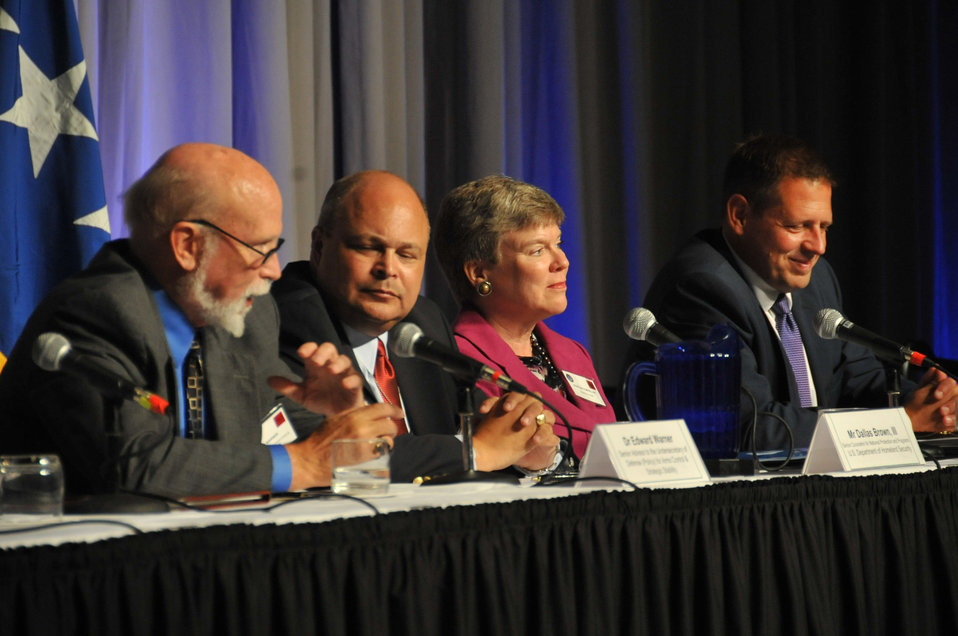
U.S. Strategic Command Deterrence Symposium: 21st Century National Security Panel

Panelists (left to right) Mr. Dallas Brown, III, Senior Counselor for National Protection and Programs, Department of Homeland Security, Ms.Rose Gottemoeller, Assistant Secretary of State for Verification, Compliance and Implementation, Department of State, and Dr. Peter Lavoy, Deputy Director of of National Intelligence for Analysis, speak during the 'Contributions of the U.S. Government to 21st Century National Security Strategy,' panel at the 2010 United States Strategic Command Deterrence Symposium, Aug. 11, 2010, at the Qwest Center, Omaha, Neb.
This annual symposium, brought together academic, government, military and international experts with the goal of exploring a broad range of deterrence issues during a single event. 'Exploring the Many Facets of Deterrence ' is the theme for the 2010 symposium.